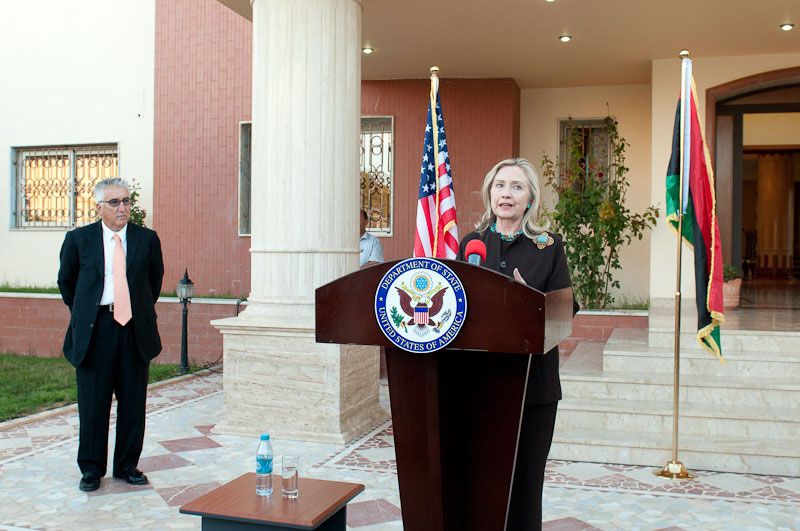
Secretary Clinton Speaks With Embassy Tripoli Staff and Families

U.S. Secretary of State Hillary Rodham Clinton, accompanied by U.S. Ambassador to Libya Gene Kretz, speaks with Embassy Tripoli staff and families at the recently-opened U.S. Embassy in Tripoli, Libya, on October 18, 2011.